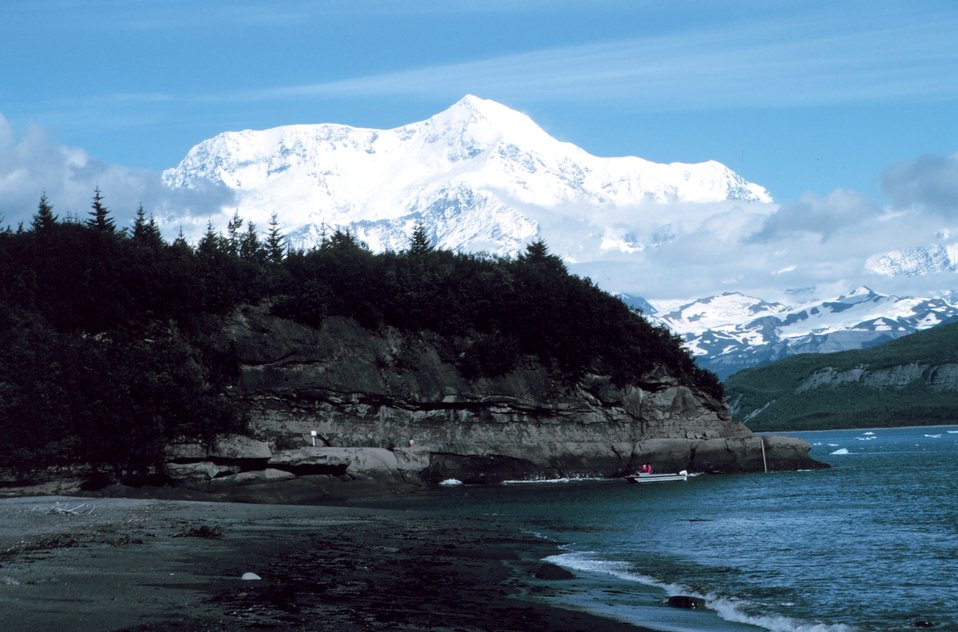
Photo #7 of Mount St. Elias sequence. Mount Saint Elias is one of the largest mountains visible from the sea on the North American continent. It rises to a height of 18,008 feet in a distance of less than 20 miles from sea level at Icy Bay.